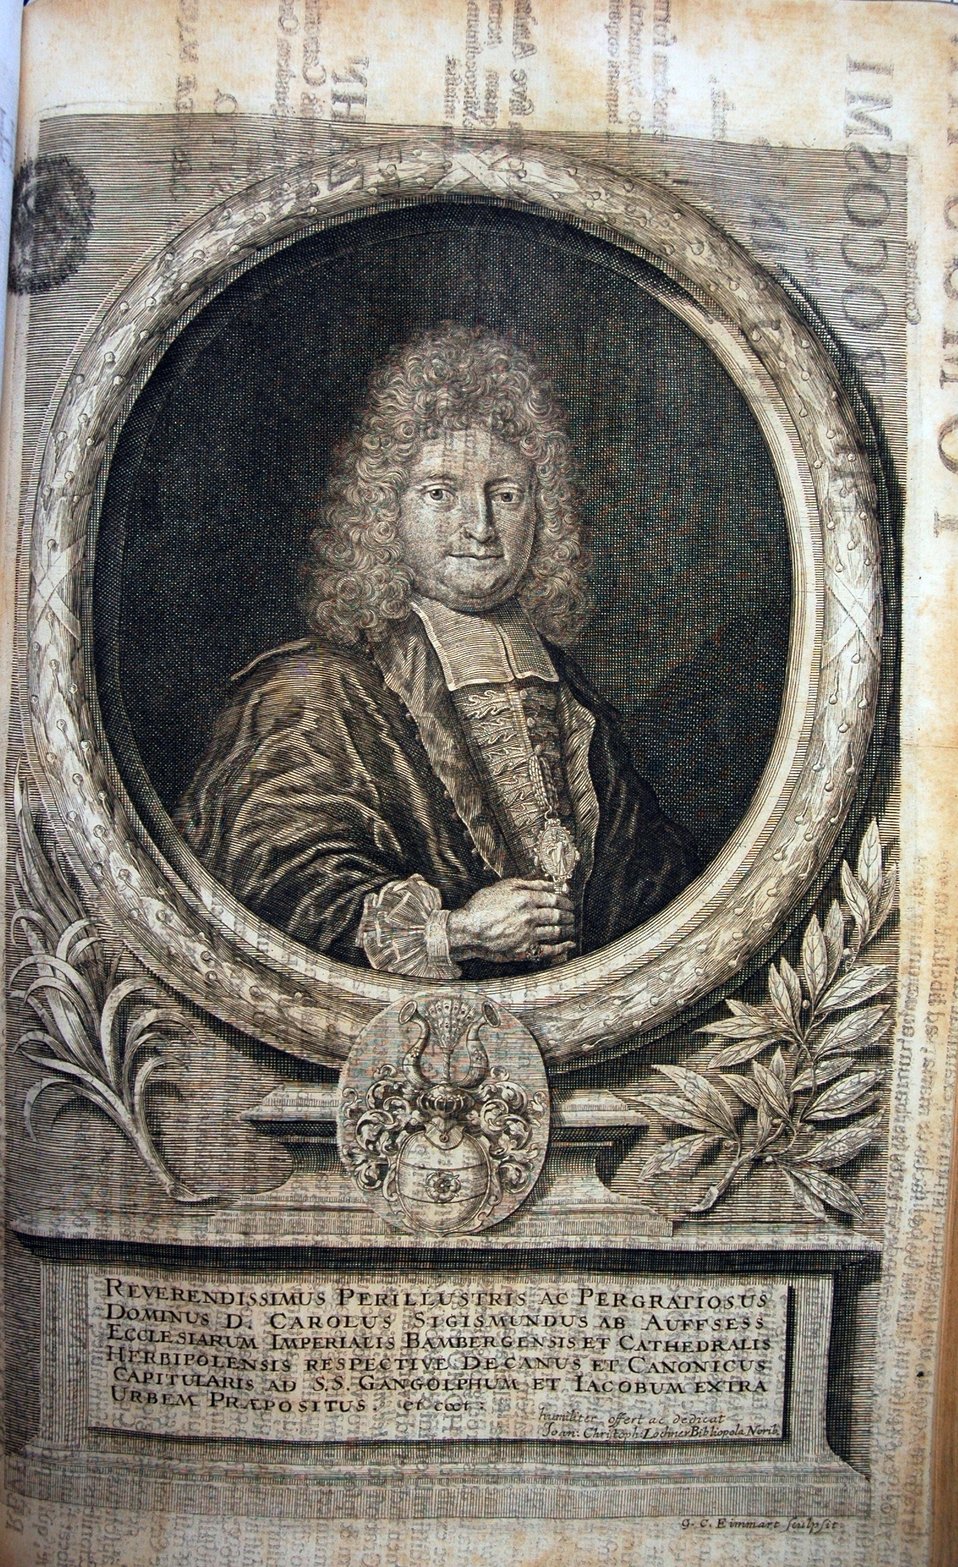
'Specula physico-mathematico-historica....' by Johann Zahn, 1696. Library Call No. Q155 .Z33 1696. Volume III is dedicated to Bishop Carolus Sigismundus of Bamberg.